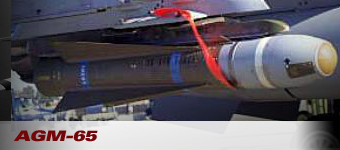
AGM-65 Maverick

The AGM-65 Maverick completed its first guided launch in December 1969.